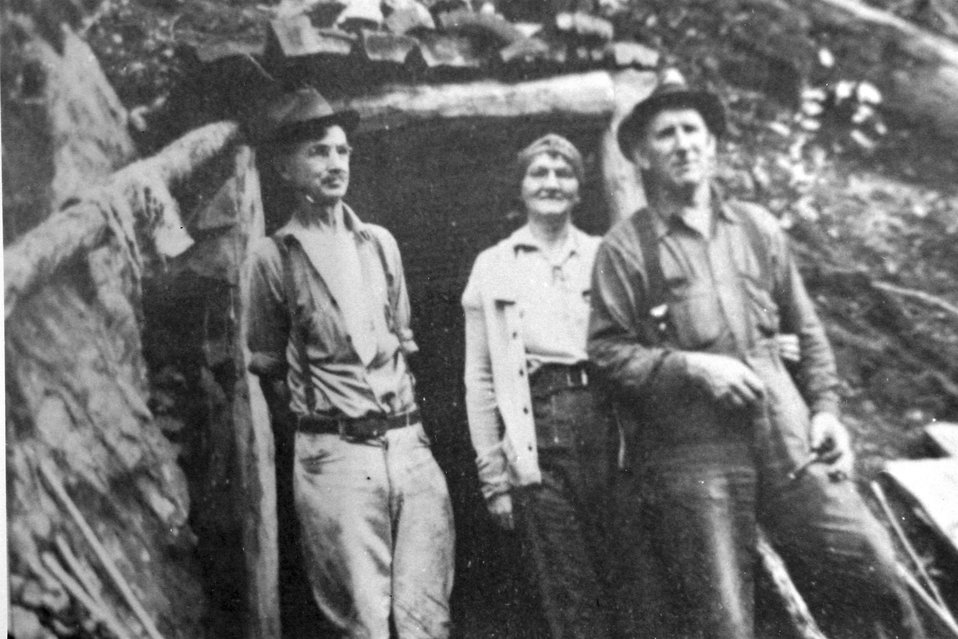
Mule Creek, Slim Damon and Mr. & Mrs. Corwin